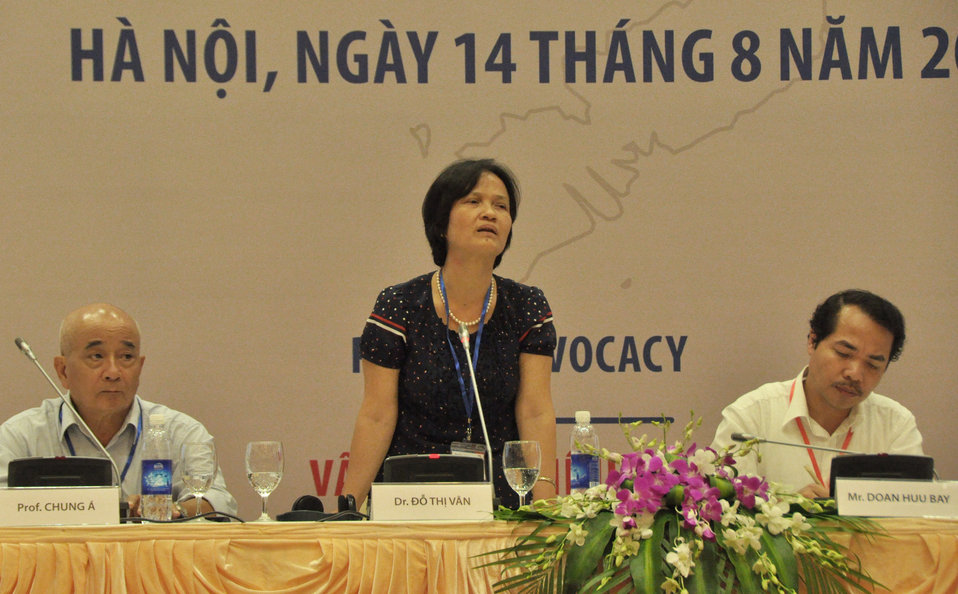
USAID Health Policy Initiative End of Project Workshop

Hanoi, August 14, 2013.